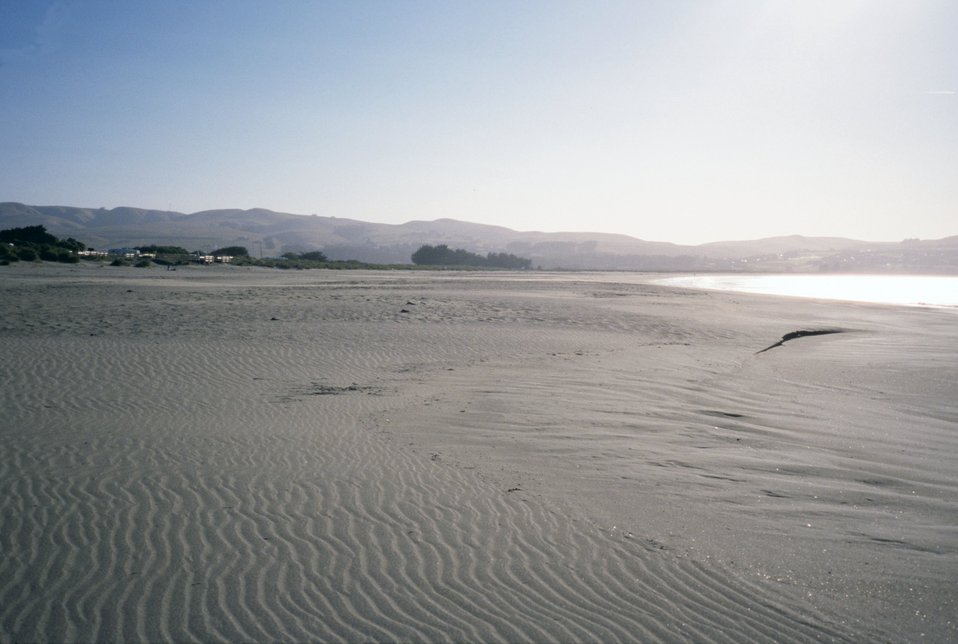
Doran Beach